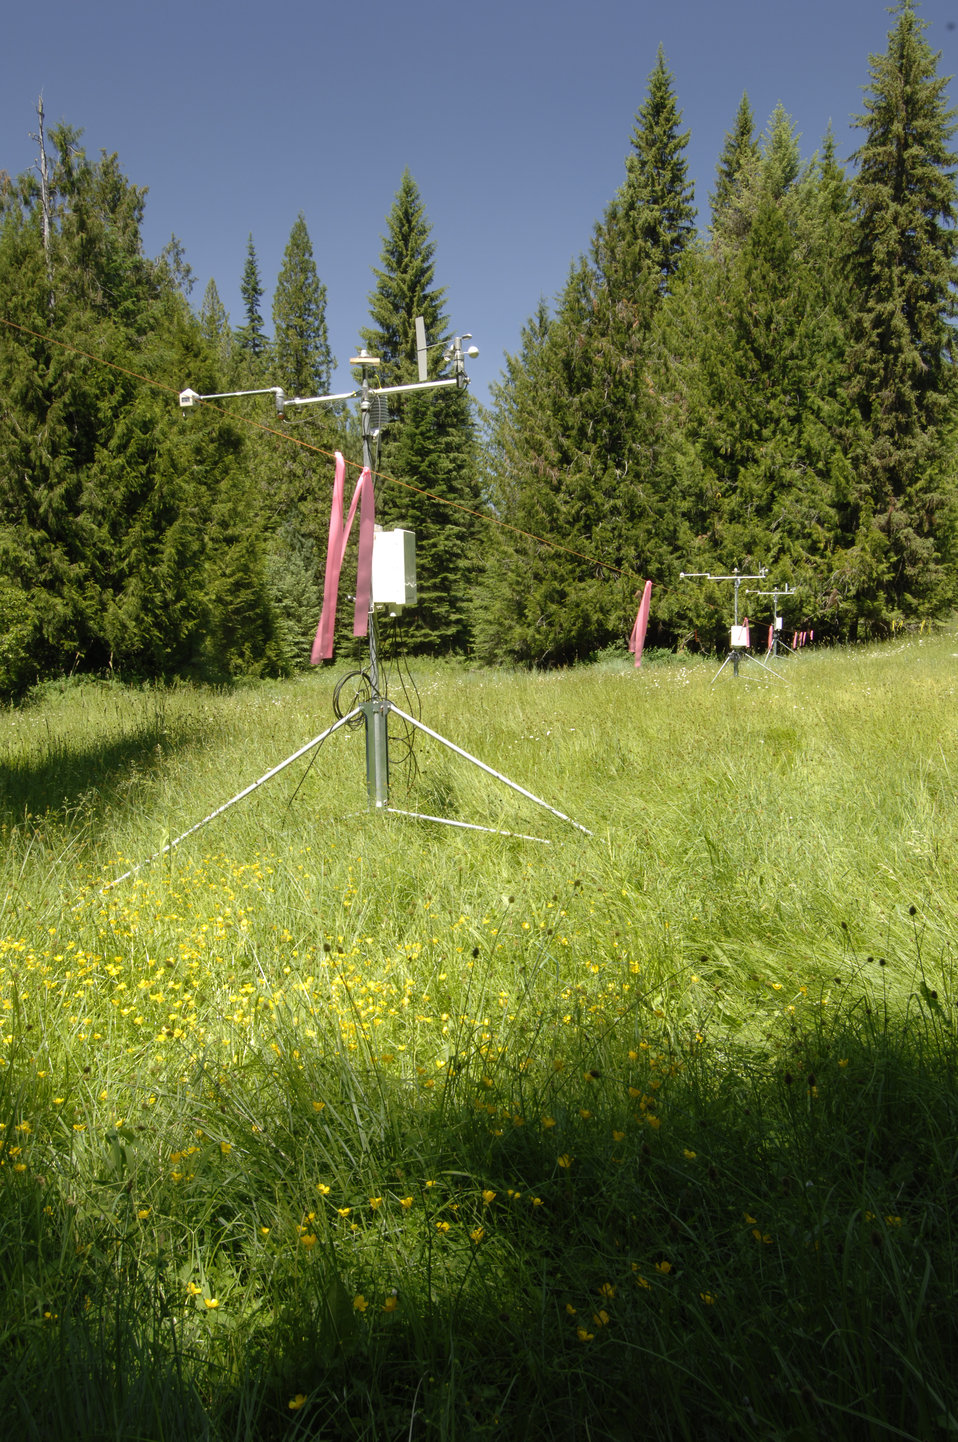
This is the hydrometeorological instrumentation used in the University of Idaho Experimental Forest project with funding provided by the U.S. Department of Agriculture's (USDA) Cooperative State Research, Education, and Extension Service (CSREES) near Moscow, Idaho on July 8, 2008. Hydrometeorology is the study of atmospheric water, especially precipitation, as it affects agriculture, water supply, flood control, and power generation. The purpose of this project is to understand the hydrology of discontinuous forests to optimize production of water resources, reduce fire hazard risk, sustain forest health and timber supply, and develop climate change adaptation strategies.